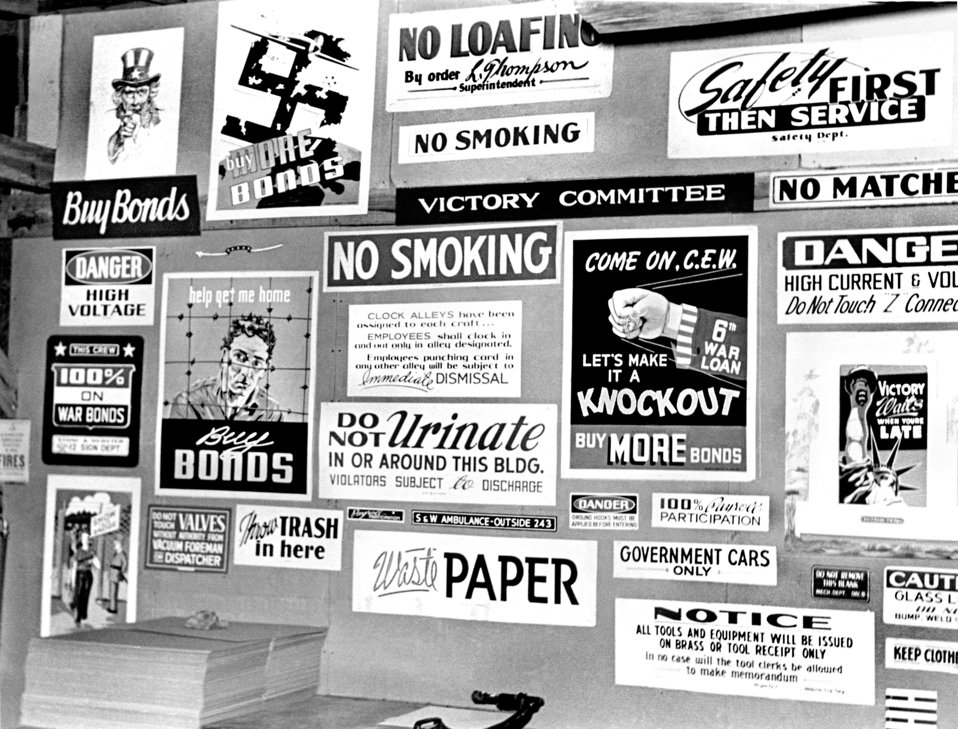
Signs at Graphics Department 1943 Oak Ridge

roll330-43 DOE photo Ed Westcott 10-13-1944 Oak Ridge Tennessee